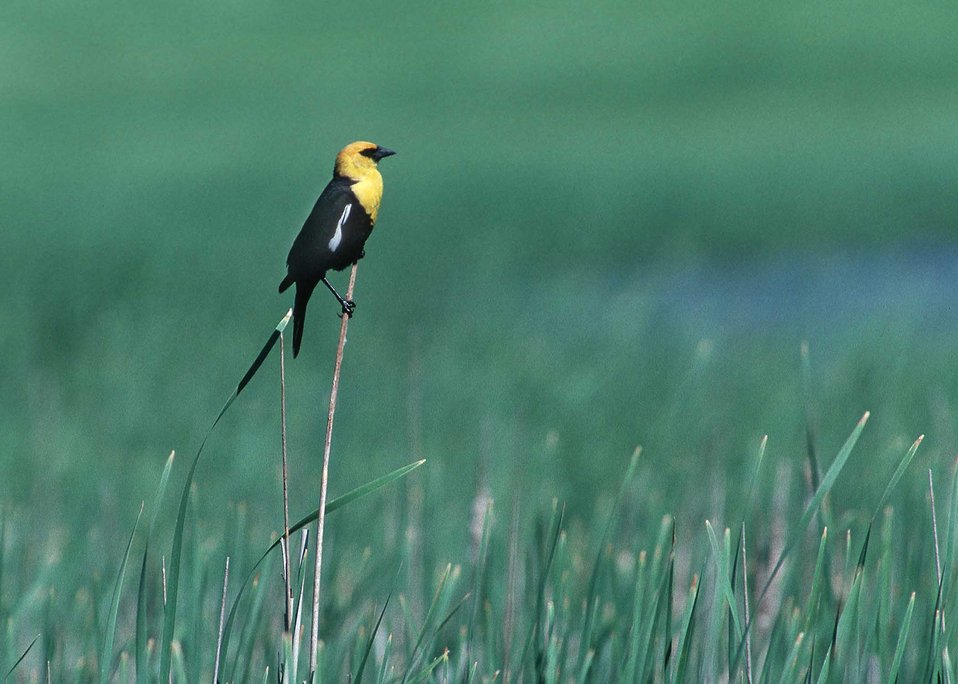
Prarie potholes provide an abundance of vital habitat for wildlife. Here a Yellow-Headed Blackbird rests upon marsh grass.